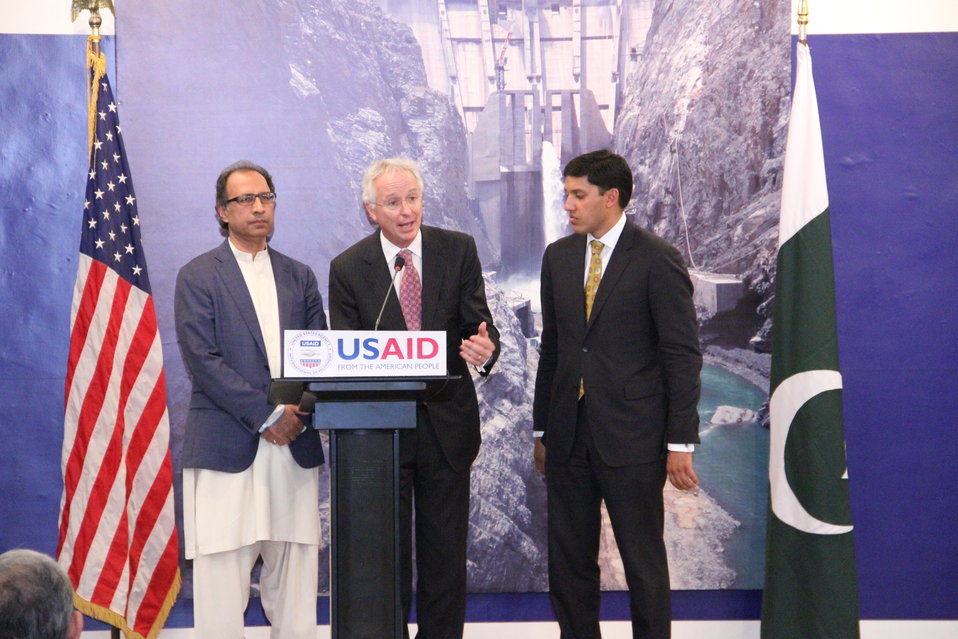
Photo Exhibition Celebrate US-PAK Cooperation at PNCA, Islamabad on April 13, 2012

Dr. Abdul Hafeez Sheikh, Federal Minister for Finance, Dr. Rajiv Shah, Administrator for USAID &Mr. Cameron Munter, Ambassador for US addressing the media